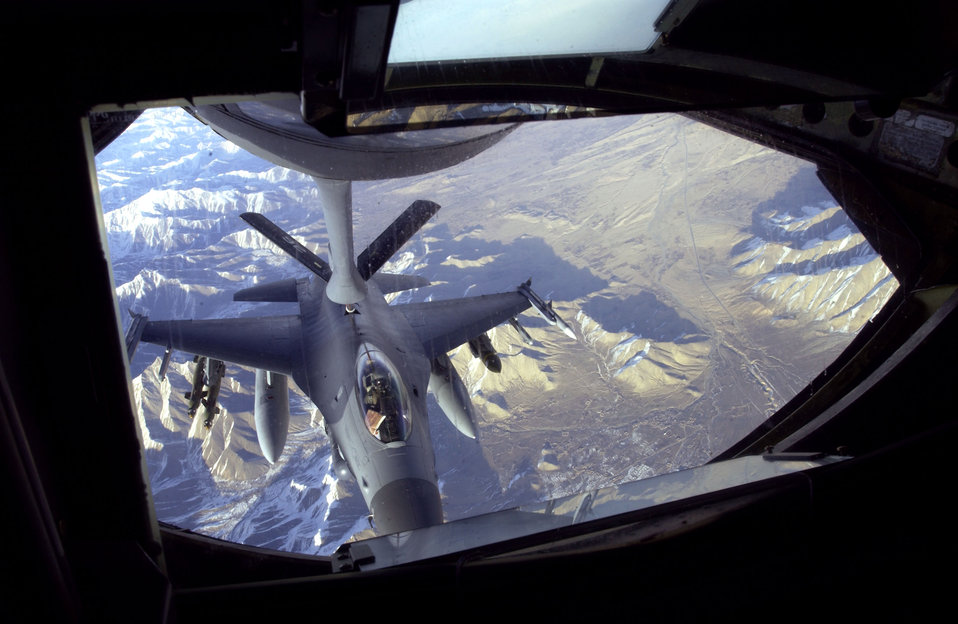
Fueling up

OVER AFGHANISTAN -- A KC-135 Stratotanker refuels an F-16 Fighting Falcon on Nov. 29 that is supporting Operation Enduring Freedom. The F-16 is from the New York Air National Guard's 174th Fighter Wing at Syracuse.